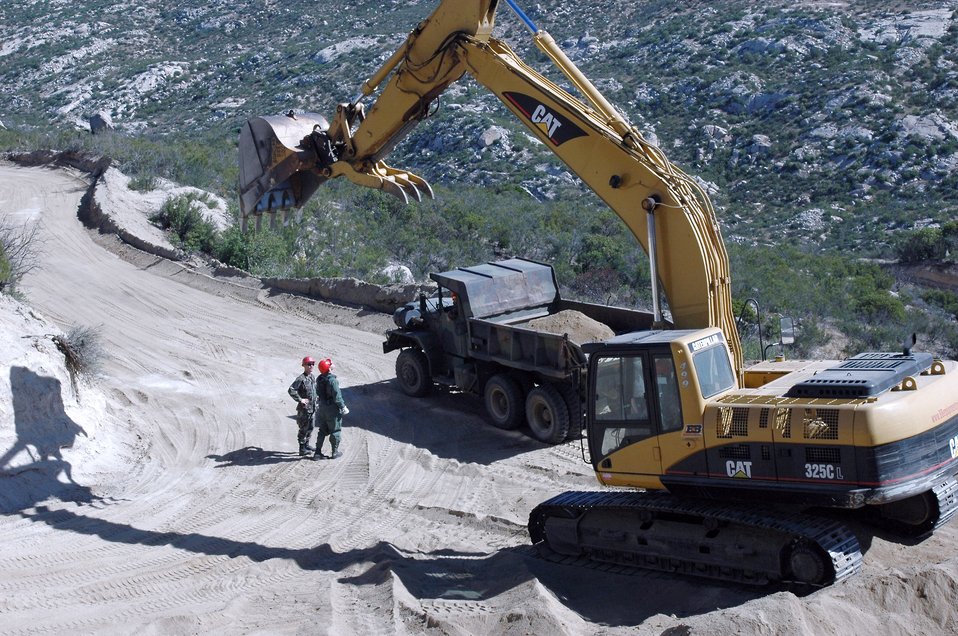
RED HORSE members make difference on the border

Under the shadow of a large excavator, Staff Sgt. Mark Ellis and Master Sgt. Chris Blackwell discuss plans to smooth out this dangerous stretch of hairpin turns that hamper Border Patrol officers in their efforts to secure the border May 1 near Campo, Calif. Sergeants Ellis and Blackwell are airfield crew specialists from the 201st RED HORSE Squadron from Fort Indiantown Gap, Pa.